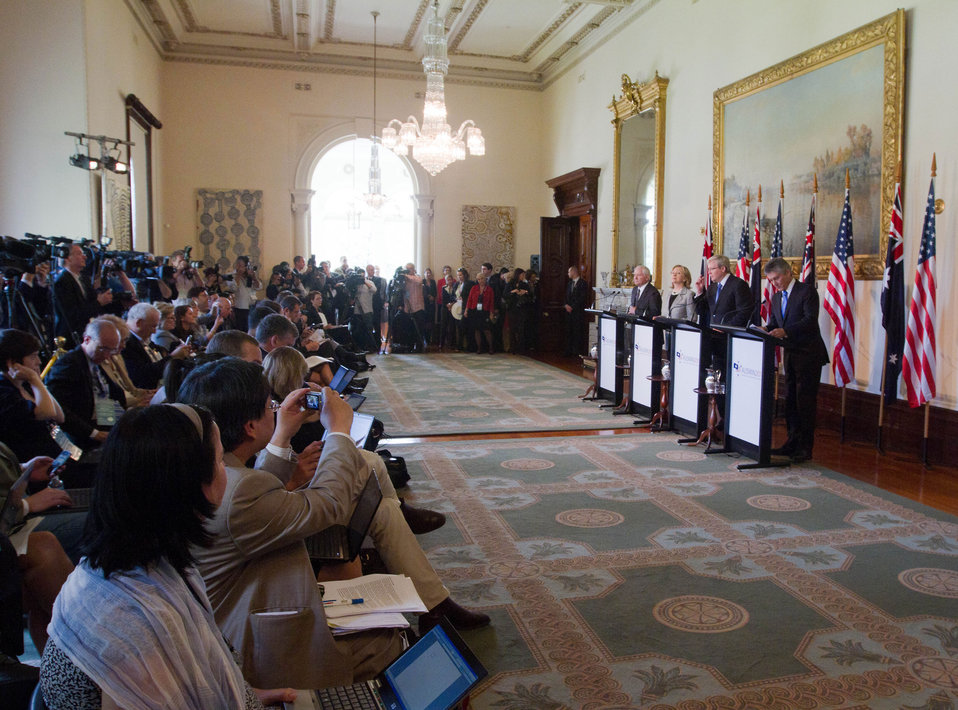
Secretary Gates, Secretary Clinton, Australian Foreign Affairs Minister Rudd, and Austrailan Defense Minister Smith Hold a Press Conference

U.S. Secretary of State Hillary Rodham Clinton, second from left, speaks as U.S. Secretary of Defense Robert Gates, left, Australian Foreign Affairs Minister Kevin Rudd, second from right, and Australian Defense Minister Stephen Smith listen during a press conference after the annual Australia-U.S. Ministerial Consultations (AUSMIN) at the Government House in Melbourne, Australia, on November 8, 2010.